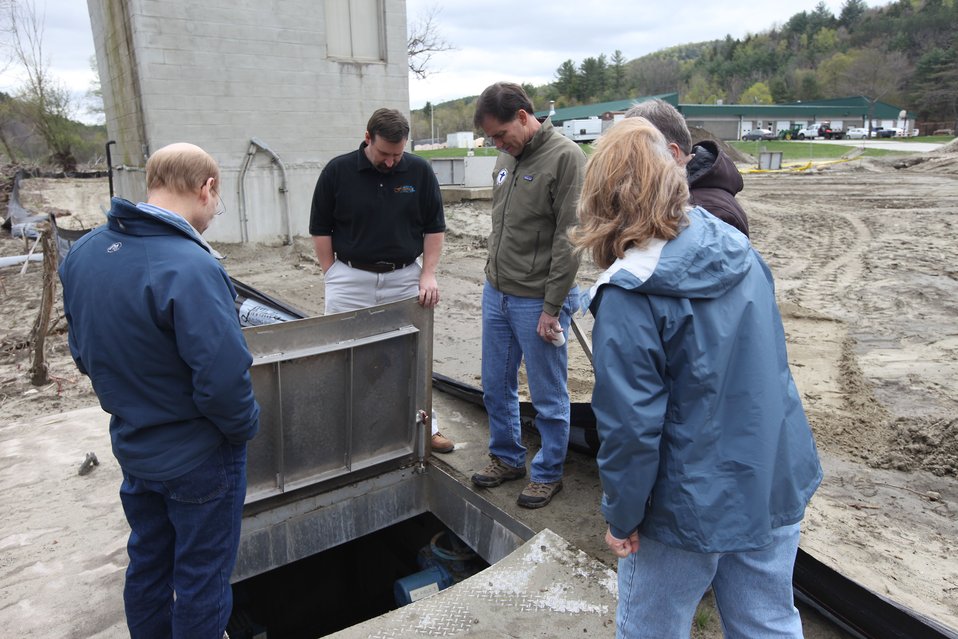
Dan Ashe and staff view damaged plumbing

U.S. Fish & Wildlife Service Director Dan Ashe visits the Northeast Region
for a tour of the White River National Fish Hatchery in Bethel, Vermont on
April 27, 2012. The hatchery was devastated by Tropical Storm Irene and
Dan Ashe had the chance to meet and thank the staff for their heroic work.
Director Ashe also visited restoration/flood response/fish passage project
sites in Rochester, Vermont and met with local officials and staff from the
White River Partnership.